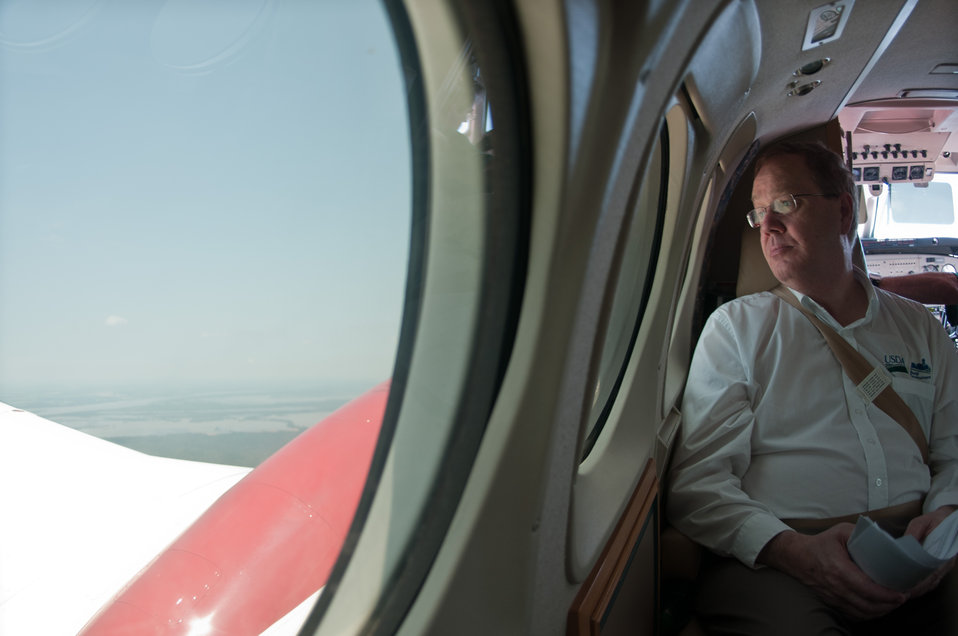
Under Secretary for Rural Development Dallas Tonsager, onboard a King Air aircraft at 12,000 foot altitude to get a broad view during the second of three aerial observation flights on Thursday, May 19, 2011. The flights are to see different regions of crop condition, water seepage and inundation along the Mississippi river.